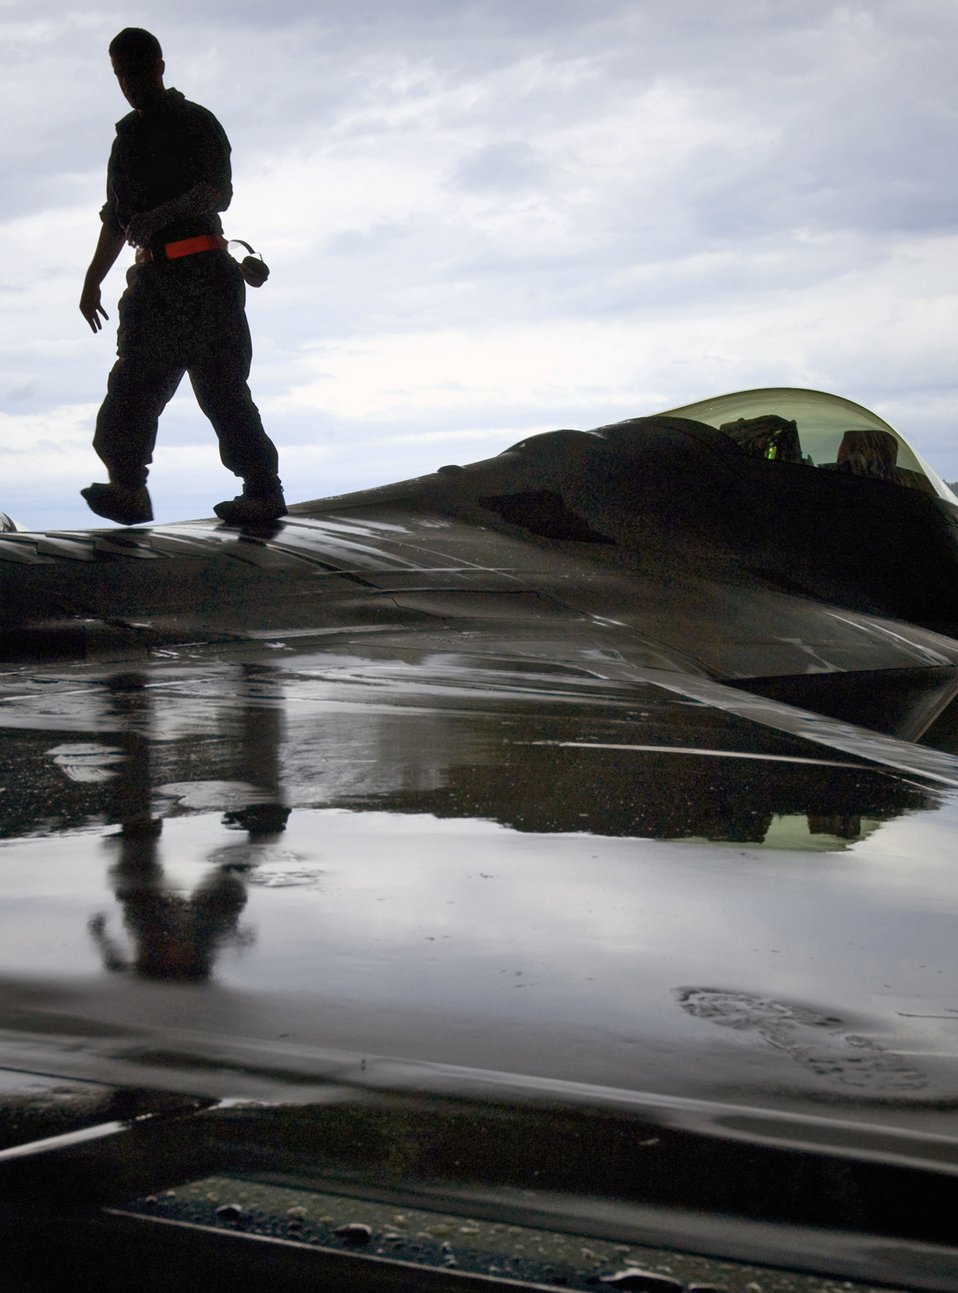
Bathtime for Raptors

Senior Airman Brandon Fontaine walks on an F-22 Raptor wing removing tape used to prevent water from entering vents during washing Aug. 14 at Elmendorf Air Force Base, Alaska. The 90th Fighter Squadron aircraft was detailed for the first time Aug. 14 since arriving to Elmendorf AFB Aug. 8. Airman Fontaine is assigned to the 3rd Aircraft Maintenance Squadron.